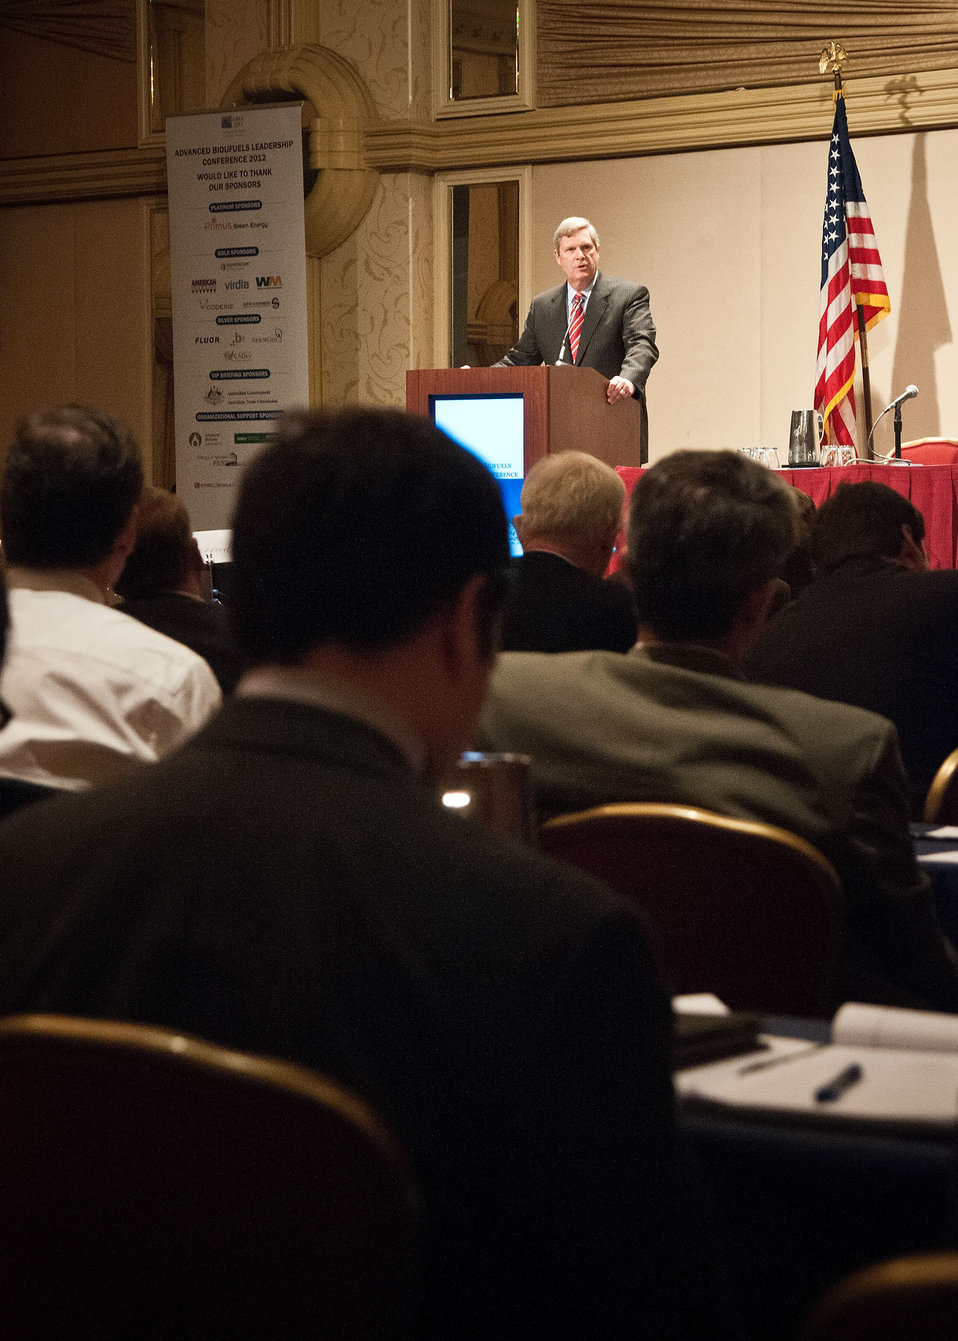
Agriculture Secretary Tom Vilsack was the keynote speaker at the Advanced Biofuels Leadership Conference to highlight the Obama Administration’s “all of the above” approach to energy in America – including renewable energy at the Capital Hilton Hotel in Washington, D.C., on Tuesday, April 3, 2012. Secretary Vilsack spoke of the economic benefits to rural America, reduced foreign oil consumption and job production. The theme of the conference was, “Go Big, Stay Strong.” As advanced biofuels move from the lab and compete for commercialization, stakeholders are strongly investing while balancing the need to stay in an uncertain policy and financial environment. At ABLC, networks are formed, relationships are developed, and decisions are made with people in a position to make a difference and those who make decisions.